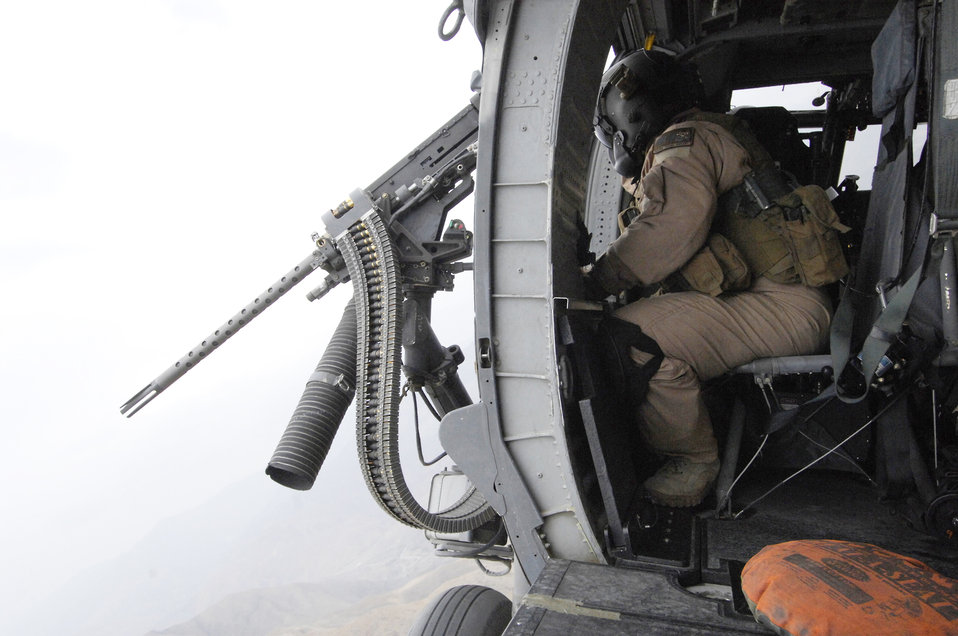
Keeping my eyes on you

Staff Sgt. Justin Schramm scans the Afghanistan countryside while on a mission on an HH-60 Pave Hawk Nov. 2, 2009. Sergeant Schramm, a flight engineer, is assigned to the 33rd Expeditionary Rescue Squadron at Bagram Airfield. Sergeant Schramm is from Eugene, Ore., and his home station is Kadena Air Base, Japan.